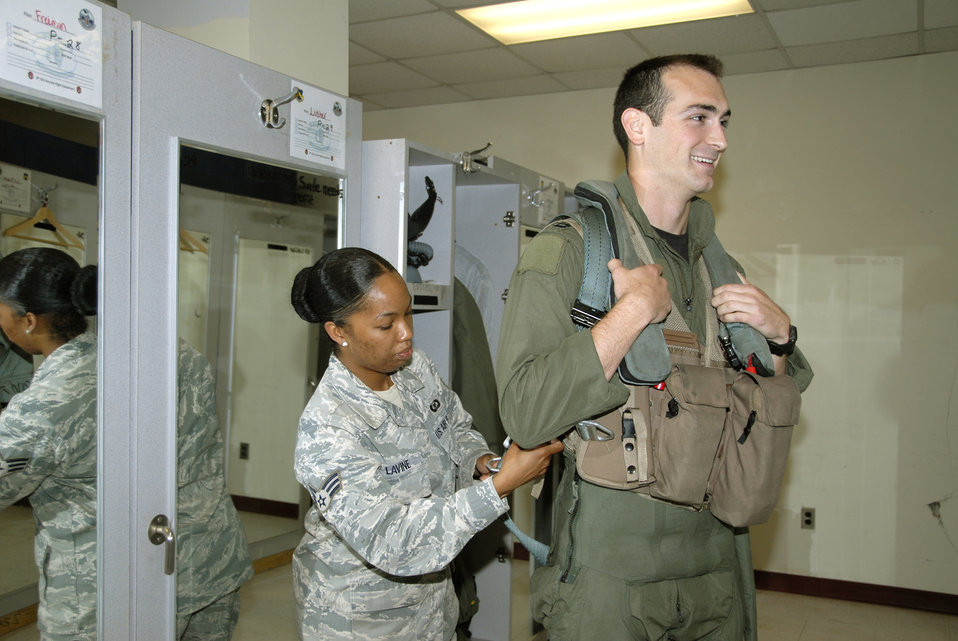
Invincible Spirit

Senior Airman Anisah Lavine fits a torso harness for Capt. Michael Leary July 28, 2010, at Kunsan Air Base, South Korea. Members of the 35th and 80th Fighter Squadrons here flew a total of 20 sorties in support of exercise Invincible Spirit July 25 through 28, the first in a planned series of South Korean and U.S. Forces Korea combined naval exercises. Airman Lavine is an 8th Operations Support Squadron aircrew flight equipment technician. Captain Leary is a 35th Fighter Squadron pilot.